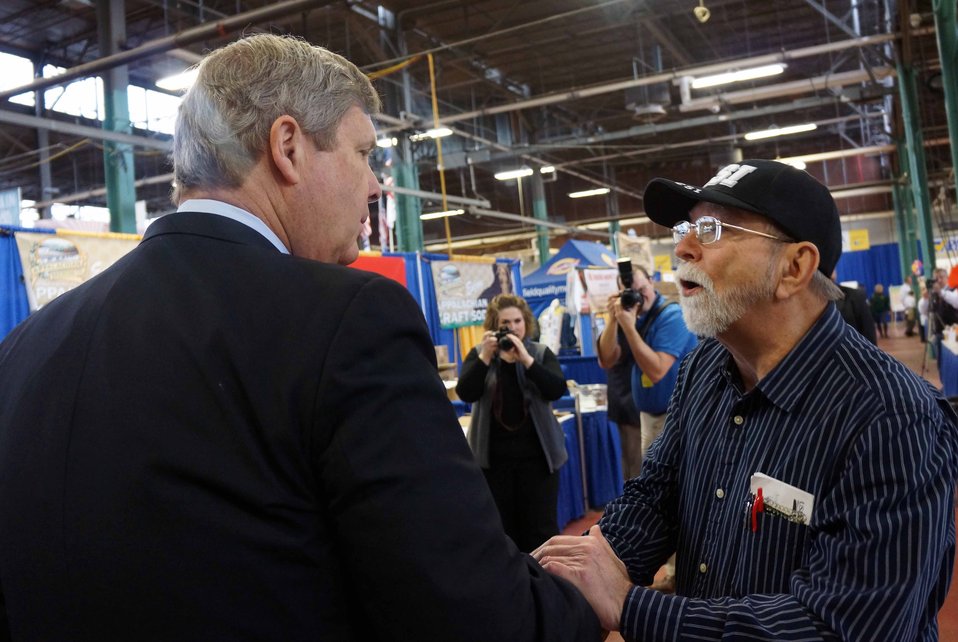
Agriculture Secretary Tom Vilsack commends Food Safety and Inspection Service (FSIS) Consumer Safety Inspector (CSI) Thomas Diemert for his commitment to consumer safety and his outreach efforts at the Pennsylvania Farm Show on Jan. 13, 2013 in Harrisburg, PA.